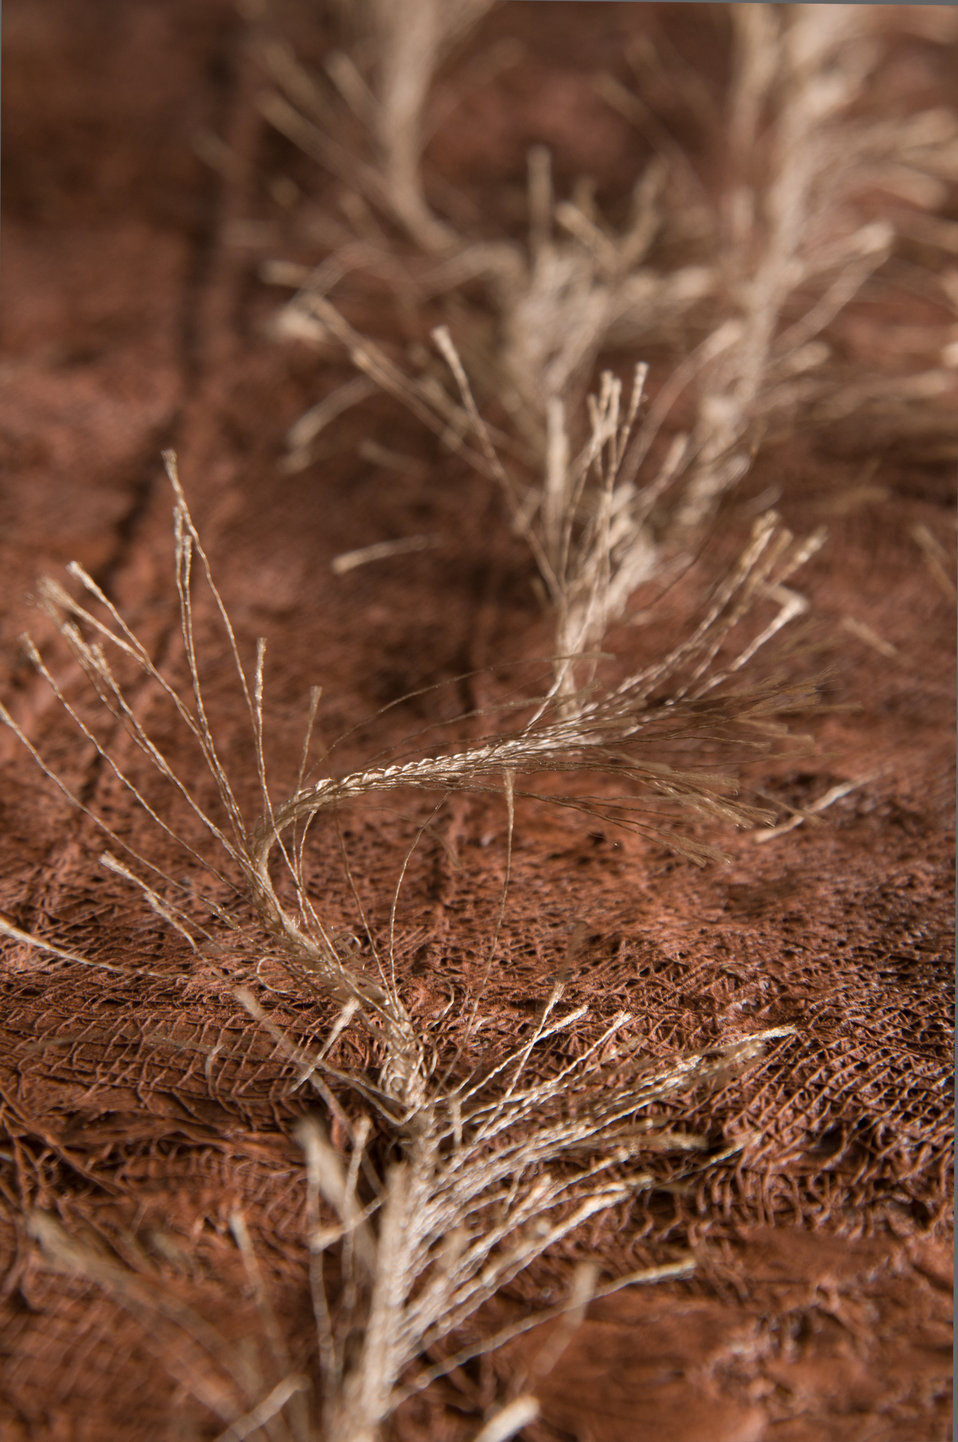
Online Viewer's Choice entries of the 2013 Art & Agriculture, Tuesday, July 9, 2013, in the South Building, Washington, D.C. Themes were expressed by employees from across the department and the contest was open to full-time and part-time USDA employees. Winning artwork will be displayed till the end of the year. U.S. Artistic expression is a creative outlet that is vital for an individual to grow and develop.